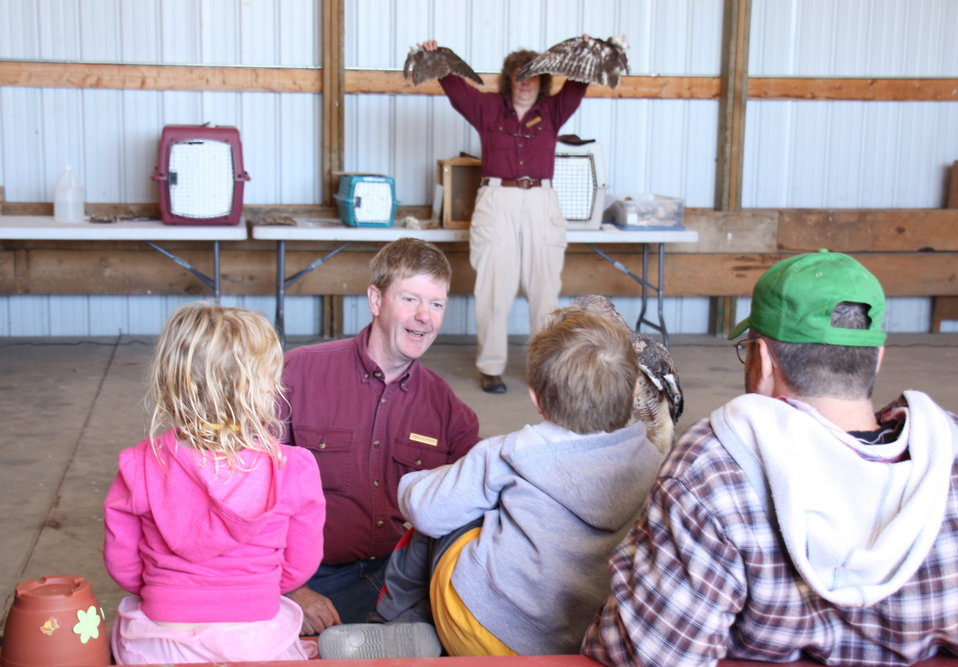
Prairie Fest 2012

Black Hills Raptor Center Show